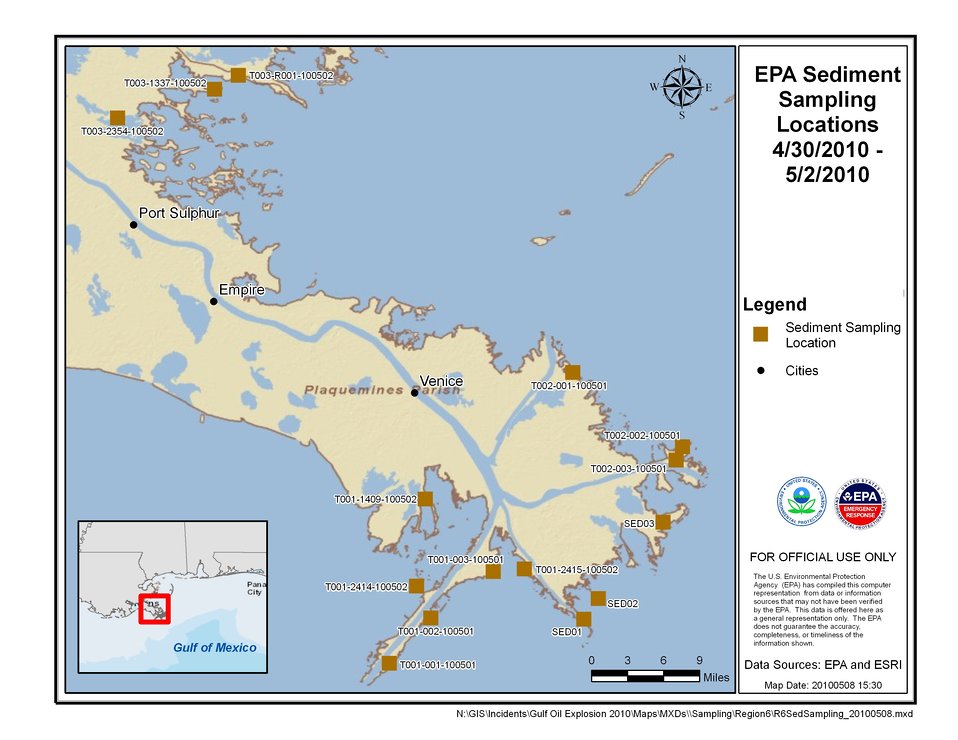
EPA Sediment Sampling Locations April 30 - May 3, 2010